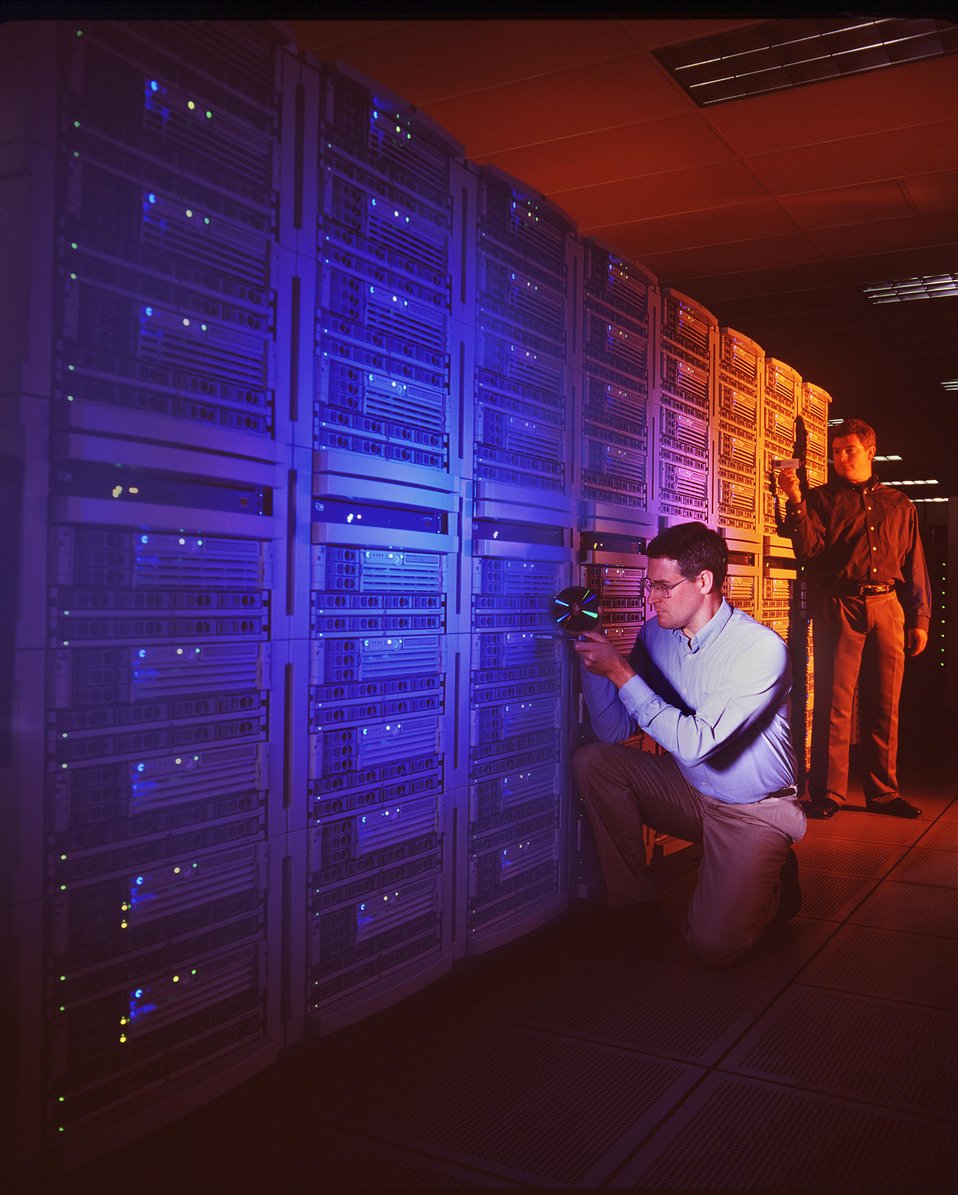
THE 11.8 TERAFLOP HEWLETT-PACKARD SUPERCOMPUTER AT PACIFIC NORTHWEST NATIONAL LABORATORY HAS MORE THAN 2,000 PROCESSORS AND 6.8 TERABYTES RAM.

LOCATED AT PNNL'S WILLIAM R. WILEY ENVIRONMENTAL MOLECULAR SCIENCES LABORATORY, IT IS ONE OF THE TOP SUPERCOMPUTERS IN THE WORLD. SCIENTISTS USE THE HP SUPERCOMPUTER TO STUDY COMPLEX CHEMICAL PROBLEMS THAT FORM THE BASIS FOR NEW DISCOVERIES IN AREAS SUCH AS BIOLOGICAL SYSTEMS, SUBSURFACE TRANSPORT, MATERIAL DESIGN, ATMOSPHERIC CHEMISTRY AND COMBUSTION.